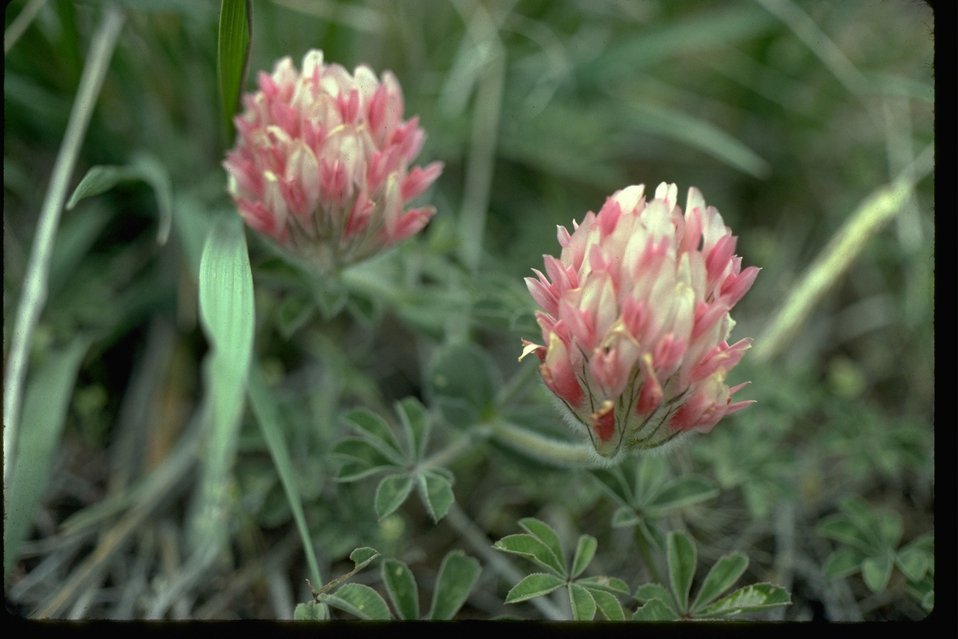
Trifolium Macrocaphelyr